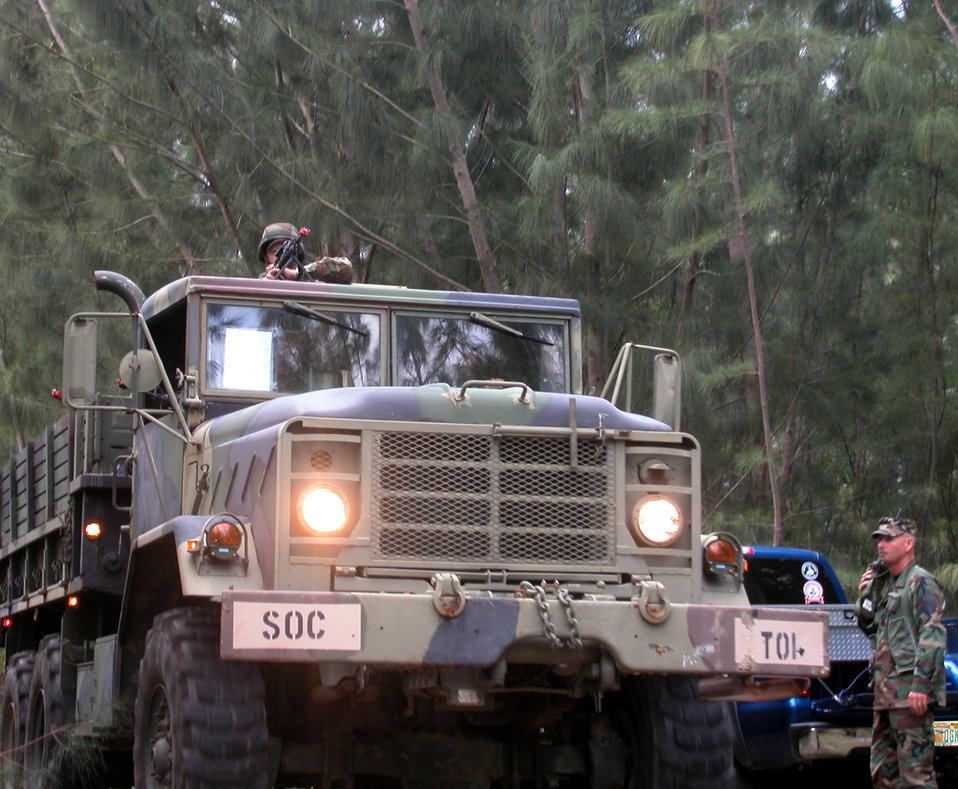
C-5 evaluation

ROBINS AIR FORCE BASE, Ga. -- Officials are evaluating the C-5 Galaxy's current health, service life and long-term viability during the first phase of a study to decide the aircraft's future. This is one of 14 aircraft Air Force officials selected for retirement.